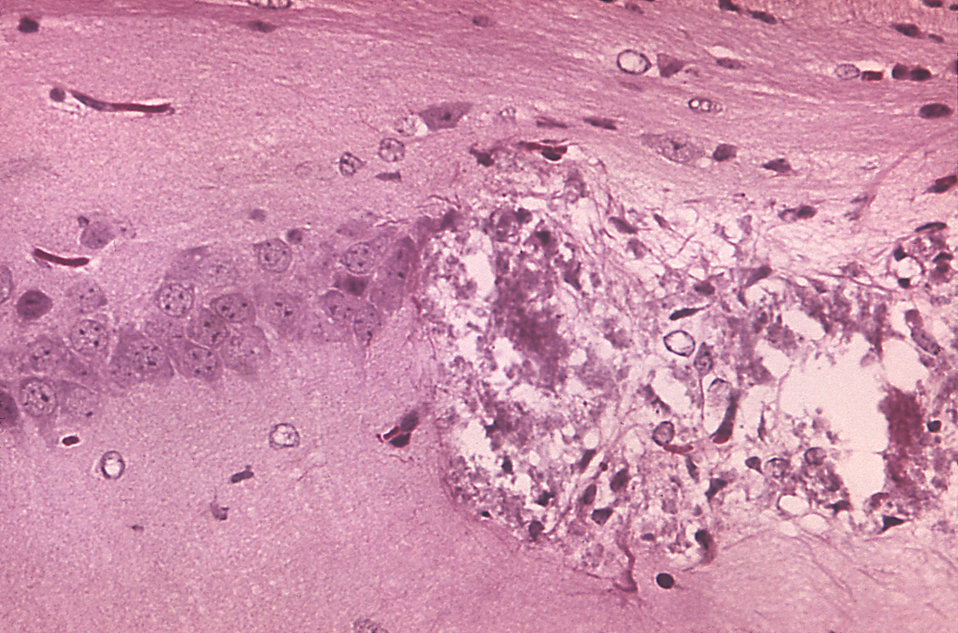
This photomicrograph depicts the cellular pathology associated with Tamiami virus encephalitis; Mag. 300X.